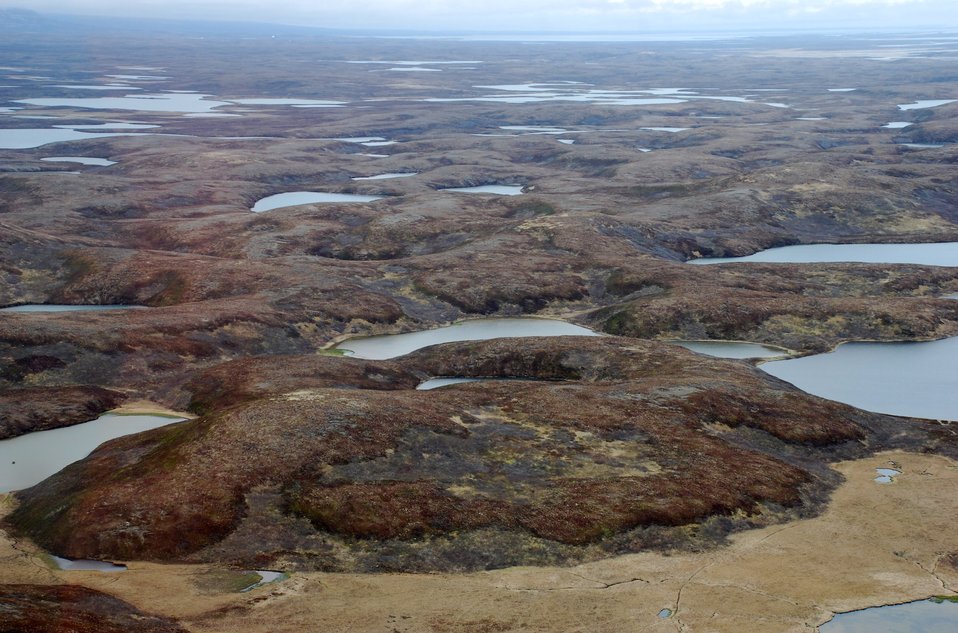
Izembek Wilderness

Wilderness north of Kinzarof Lagoon, Izembek National Wildlife Refuge
Photo by Kristine Sowl,
USFWS, Public Domain